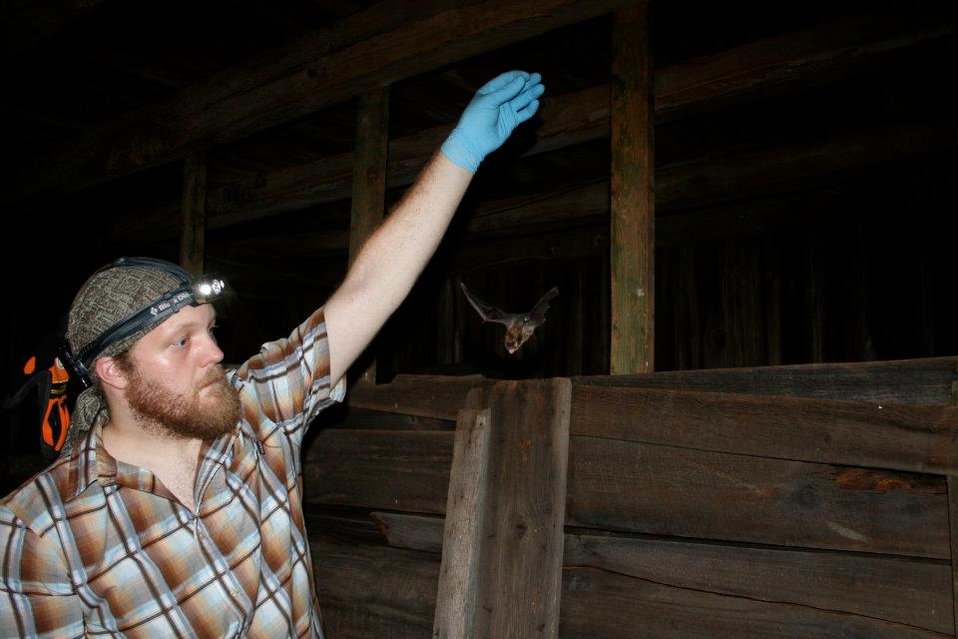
BU researcher Nate Fuller releases bat